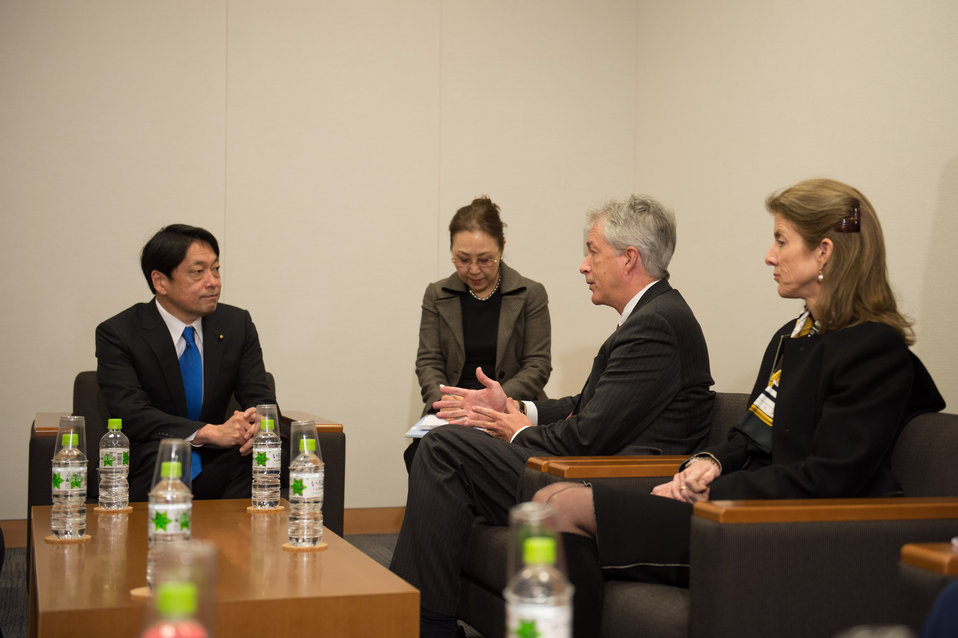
Deputy Secretary Burns with Japan’s Defense Minister Onodera

U.S. Deputy Secretary of State William J. Burns, with U.S. Ambassador to Japan Caroline Kennedy, talks to Japanese Defense Minister Itsunori Onodera in Tokyo, Japan, on January 24, 2014.